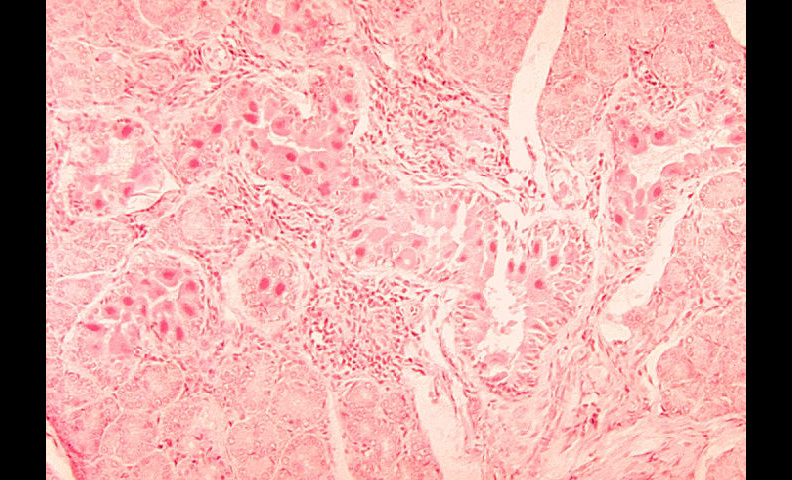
Histopathology of cytomegalovirus infection of salivary gland.